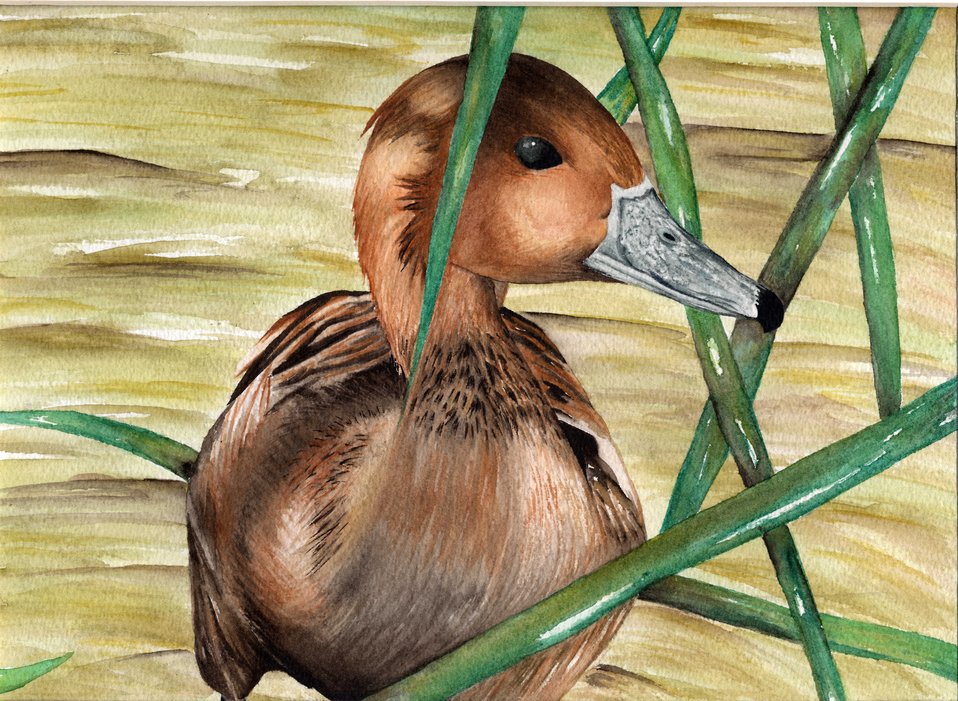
Nevada

2012 Jr Duck Stamp Program
State Best of Show
Nevada